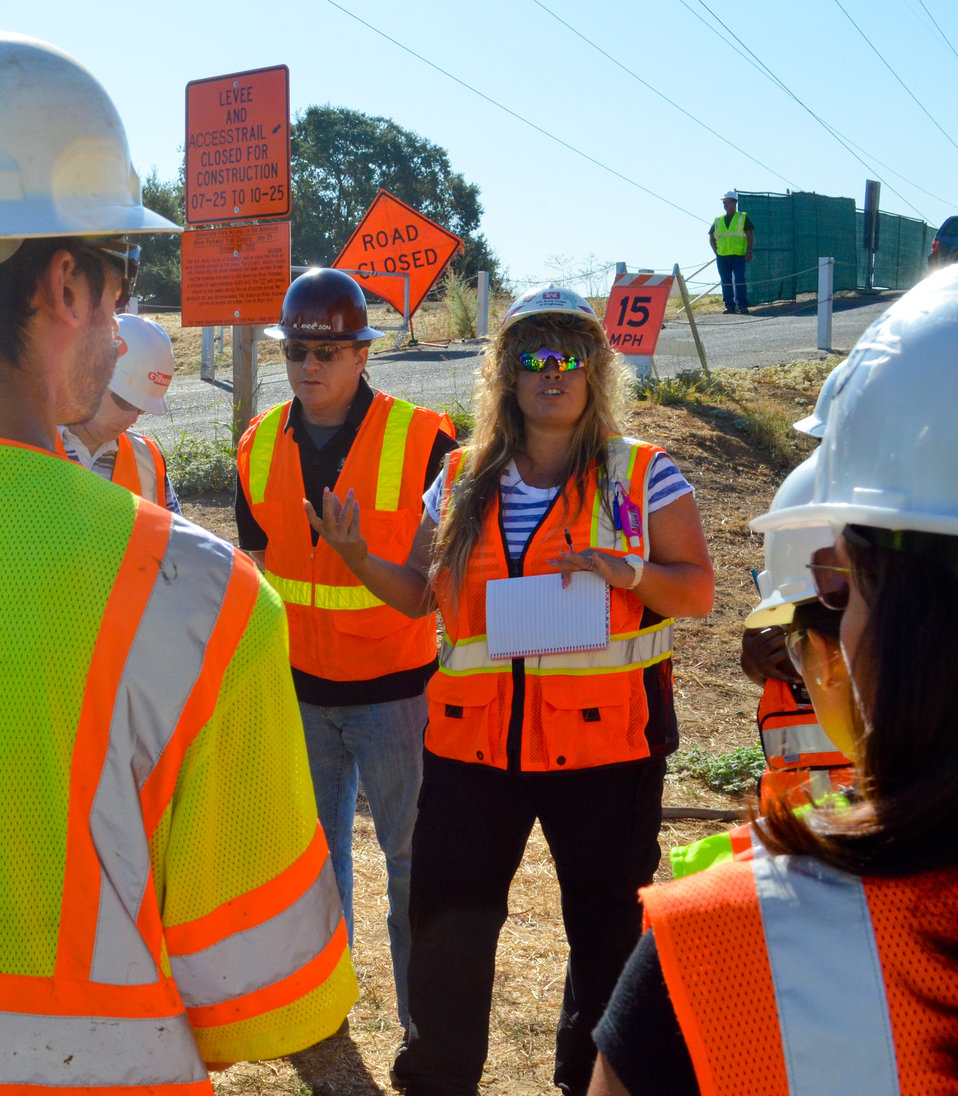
Moe Adams coducts a safety briefing

Moe Adams (center) construction representative for the U.S. Army Corps of Engineers Sacramento District gives a safety briefing Sept. 7, 2012 before leading a tour of active levee construction along the American River in Sacramento, Calif.
Sacramento State professor Mikael Anderson (left) brought 30 seniors from his construction management class to observe the types equipment used and measure operational efficiency at the Corps’ Howe Avenue levee raise project.
The project is part of the American River Common Features project, a joint flood risk reduction effort between the U.S. Army Corps of Engineers Sacramento District, the state’s Central Valley Flood Protection Board/Department of Water Resources and the Sacramento Area Flood Control Agency.